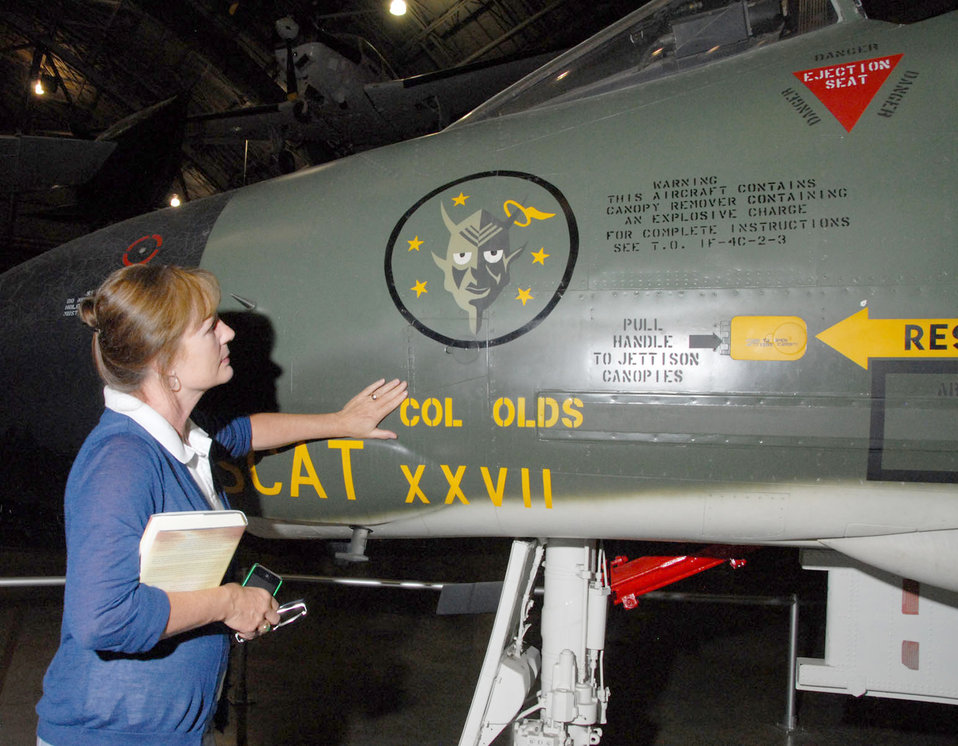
National Museum of the U.S. Air Force

Christina Olds, daughter of the late triple ace and Air Force Cross recipient Brig. Gen. Robin Olds, touches her father's F-4C Phantom II at the National Museum of the U.S. Air Force in Dayton, Ohio.